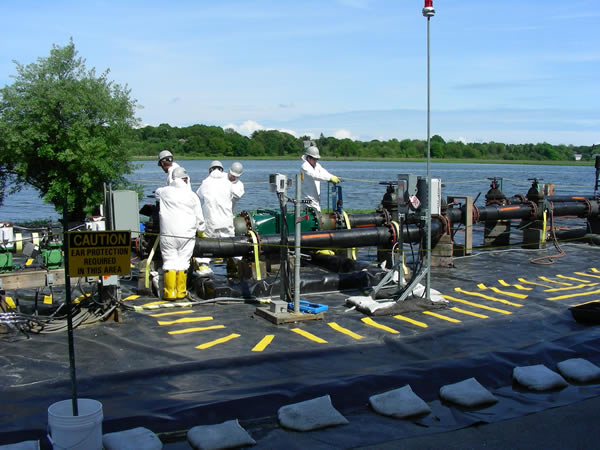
May 2009, Setting up the Manomet Street booster pump station

These stations enable the dredged material to be pumped down the distance of the harbor shoreline to both the de-sanding facility and the de-watering facility further south.